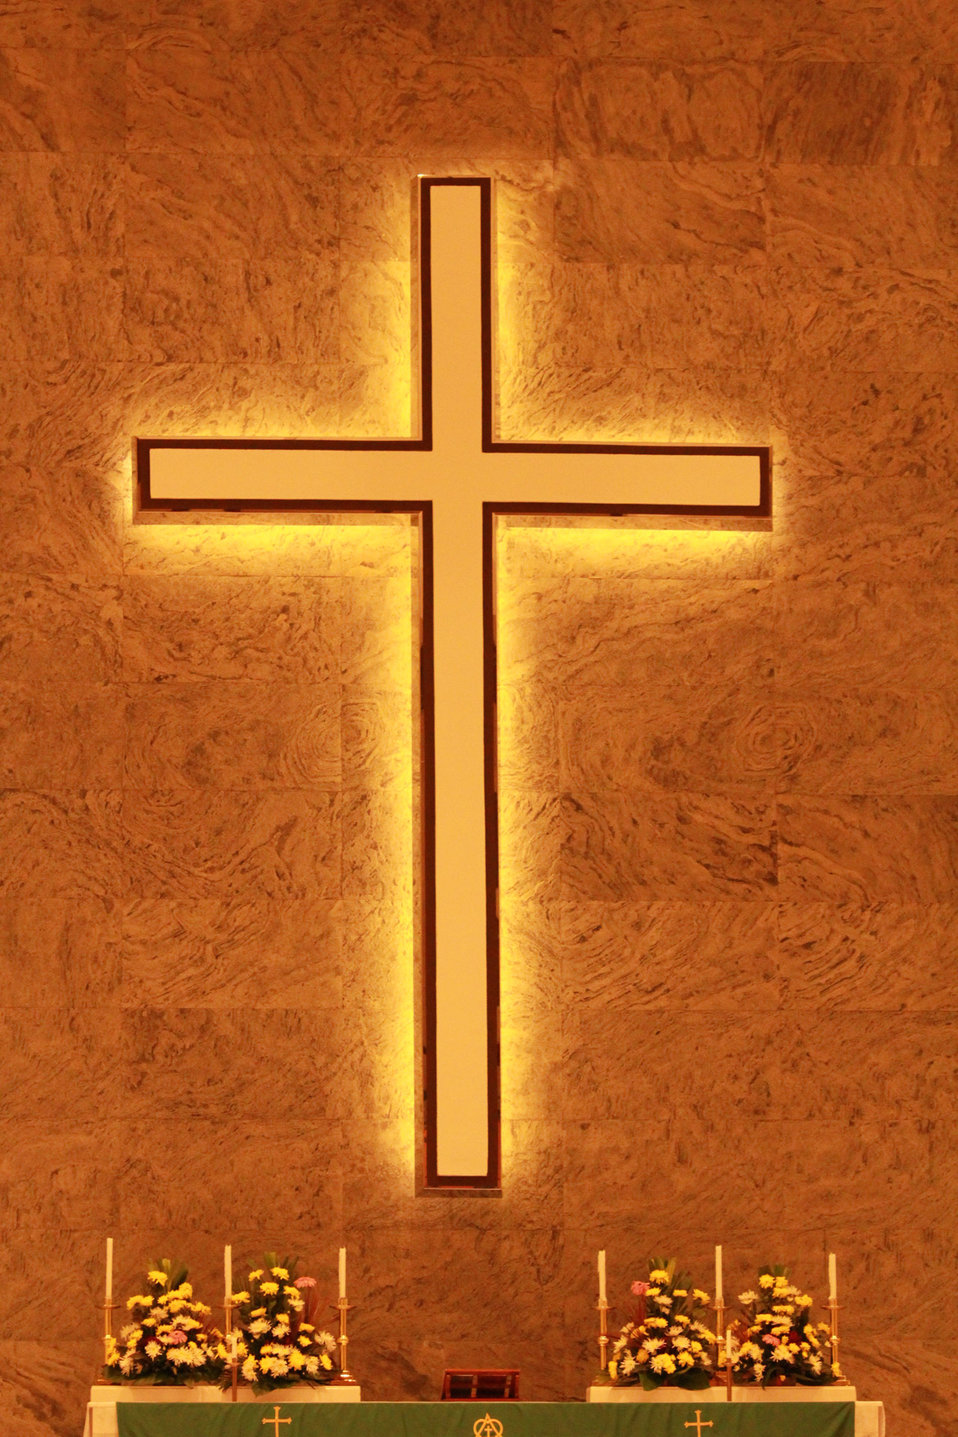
Cross 2

Cross in the altar.